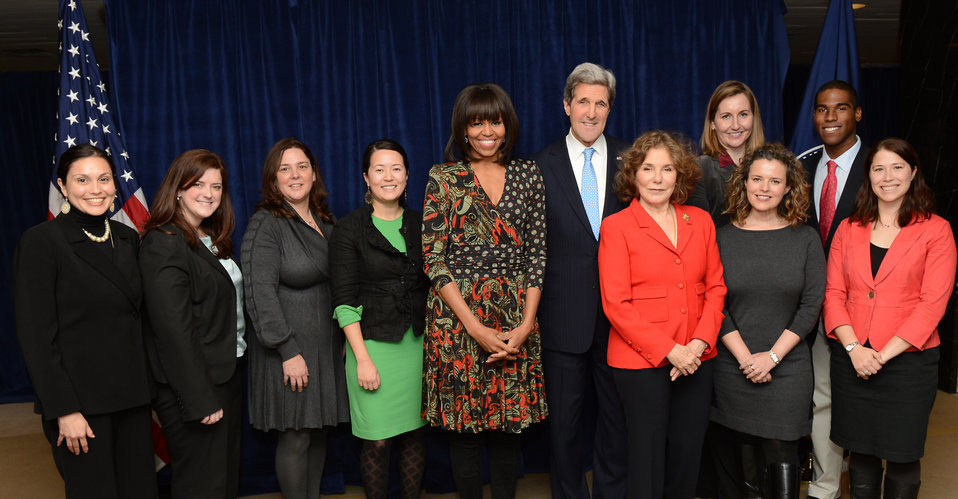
Secretary Kerry, First Lady Obama, Mrs. Heinz Kerry with participants from the first Department of State Tweetup

U.S. Secretary of State John Kerry, First Lady Michelle Obama, and Mrs. Teresa Heinz Kerry pose for a photo with participants from the first Department of State Tweetup at the 2013 International Women of Courage Award Ceremony at the U.S. Department of State in Washington, D.C., on March 8, 2013.